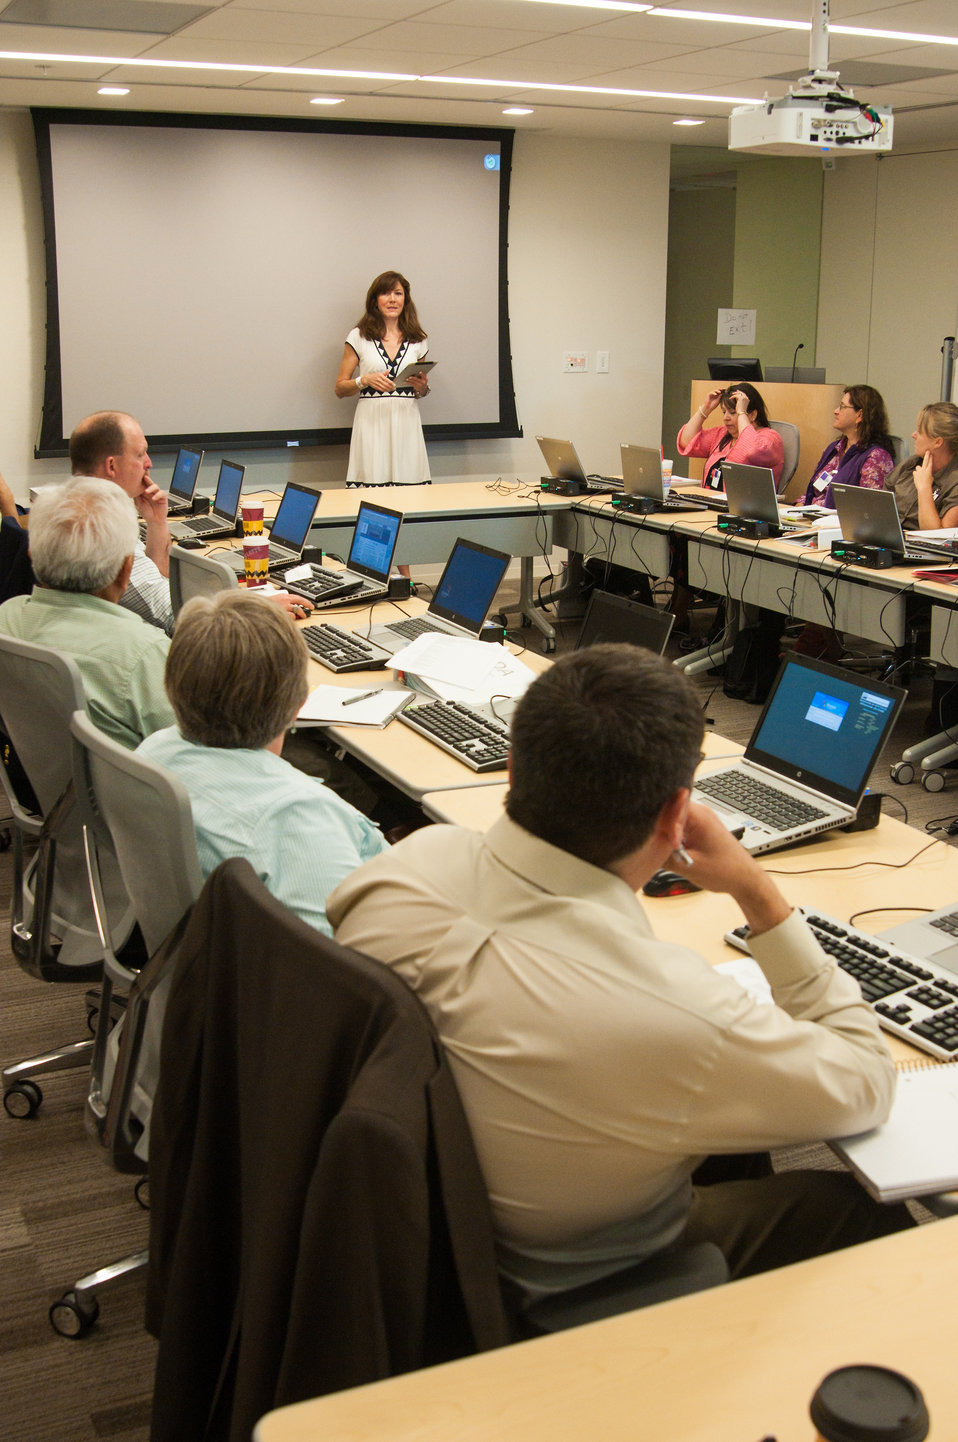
President and Chief Executive Officer American Indian Higher Education Consortium Carrie Billy discusses the value of Tribal Colleges and the United States Department of Agriculture leveraging partnerships at the USDA 2013 Land-Grant Development Tribal Fellows Program held in Washington, D.C. on Monday, Jun. 03, 2013.